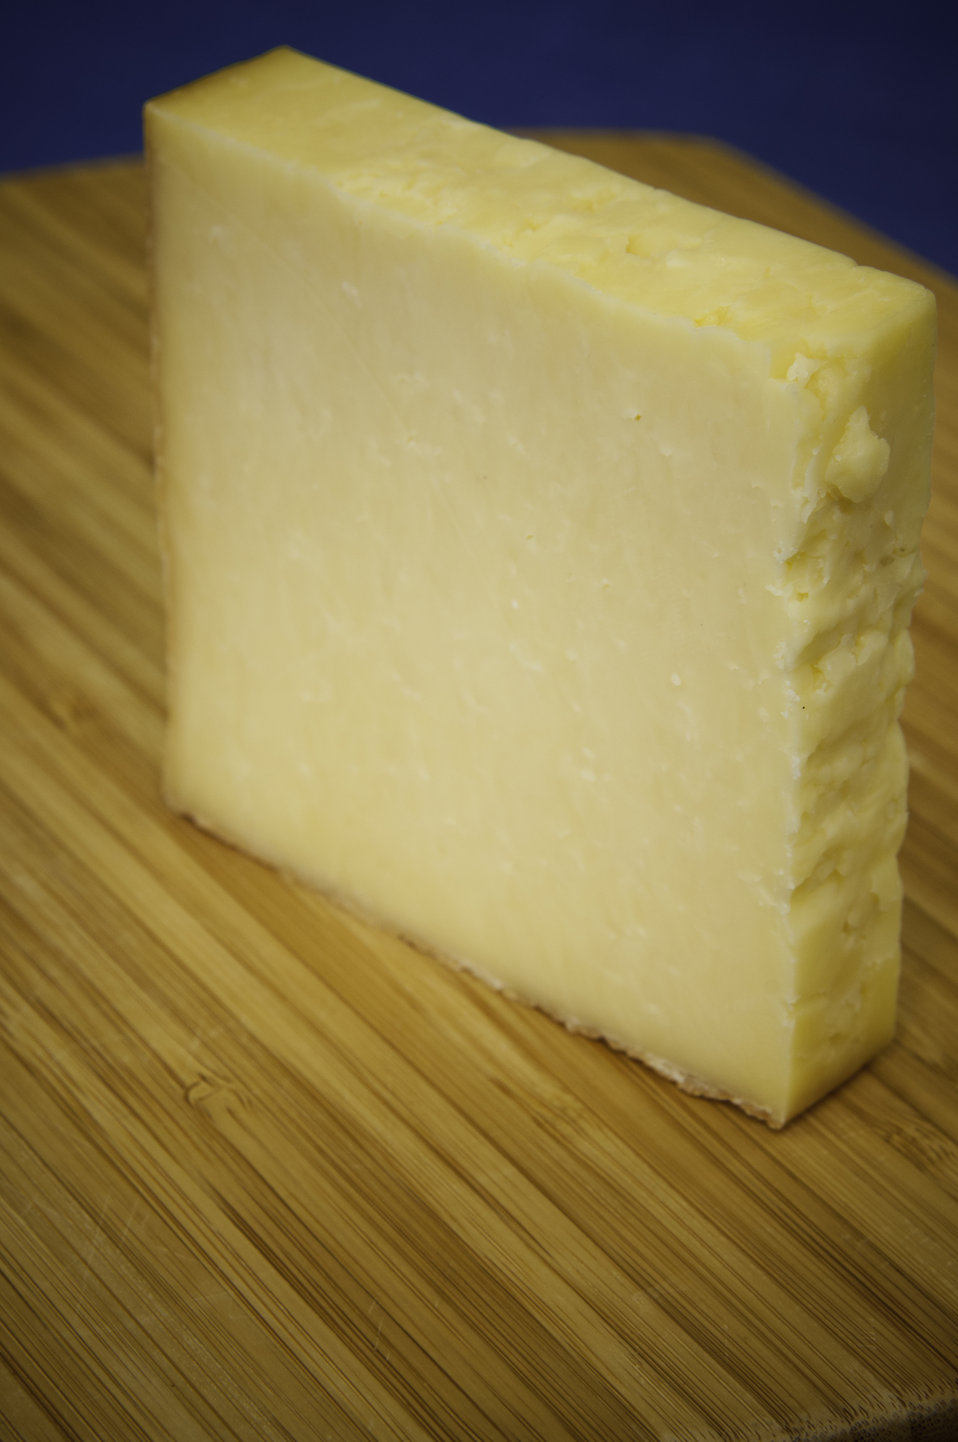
Chapel’s Country Creamery ages their Chapelle, Talbot Reserve and Bay Blue in a climate-controlled cave, which gives the cheese its unique flavor. The cave-aged cheeses develop their own natural rind. The dairy starts with fresh raw milk produced on their Grade A dairy farm in Easton, MD. The dairy herd contains grass fed Jersey and Holstein cows that produce high quality milk, rich in cream. The milk is all-natural and contains no synthetic hormones, antibiotics, or chemical compounds.